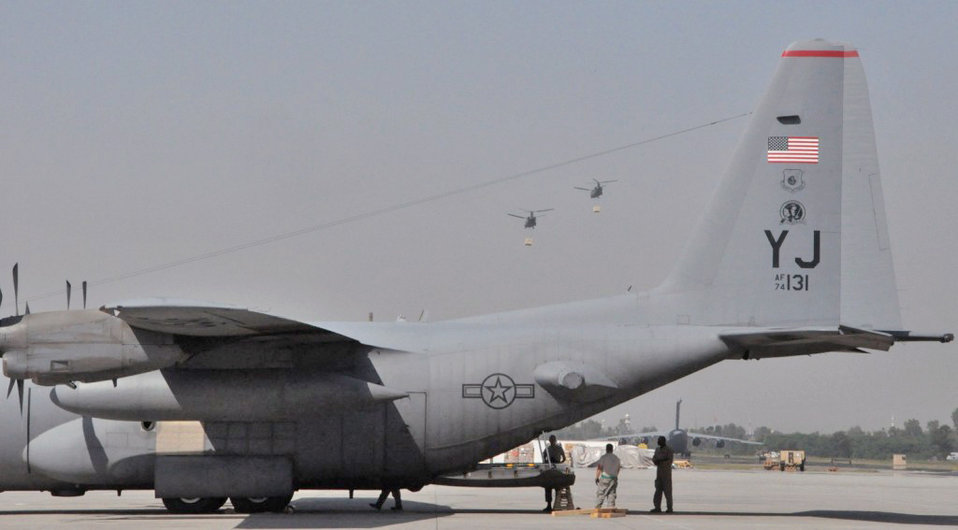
Airmen continue flow of nation-wide distribution of flood relief supplies in Pakistan

Members of a contingency response element in Pakistan prepare for the arrival of flood relief supplies to load a C-130 Hercules Sept. 20, 2010, at Pakistan Air Force Base Chaklala. Airmen deployed from the 621st Contingency Response Wing, Joint Base McGuire-Dix-Lakehurst, N.J., to augment operations at the Pakistan air force's Central Flood Relief Cell at the air base. To date, U.S. military personnel and aircraft, working in partnership with the Pakistan military, have delivered more than 3.8 million kilograms of relief supplies and rescued more than 16,000 people throughout the flood-stricken areas of Pakistan.